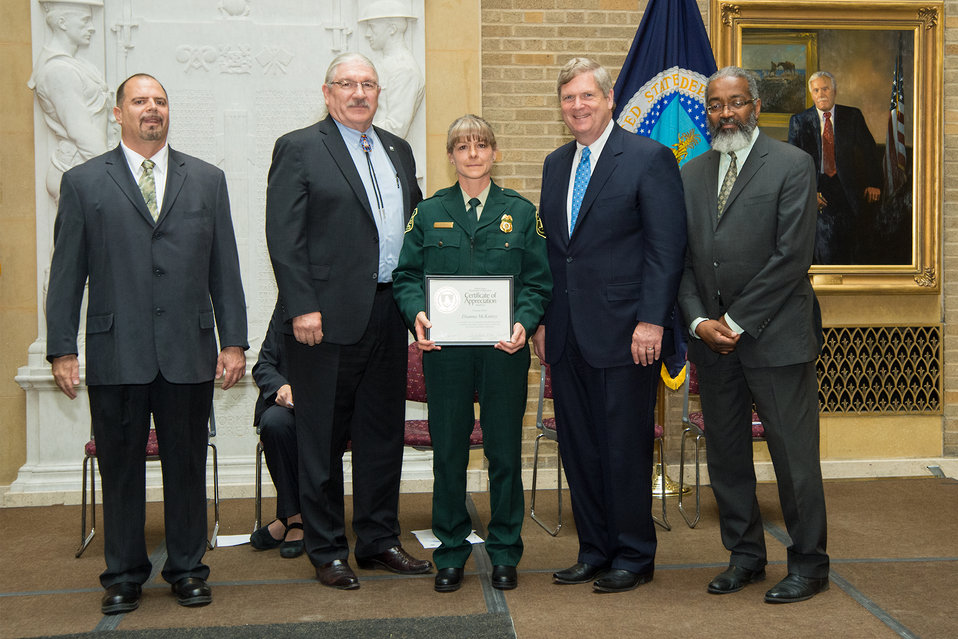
U.S. Department of Agriculture (USDA) Forest Service (FS) Montana Dianna McKinley receives the Unsung Hero Award from USDA’s Organization of Professional Employees President (OPEDA) Louis Iacoletti, USDA Natural Resources and Environment (NRE) Deputy Under Secretary Arthur “Butch” Blazer, Agriculture Secretary Tom Vilsack and USDA Assistant Secretary for Administration Dr. Gregory Parham at USDA in Washington, D.C. on Wednesday, May 7, 2014.